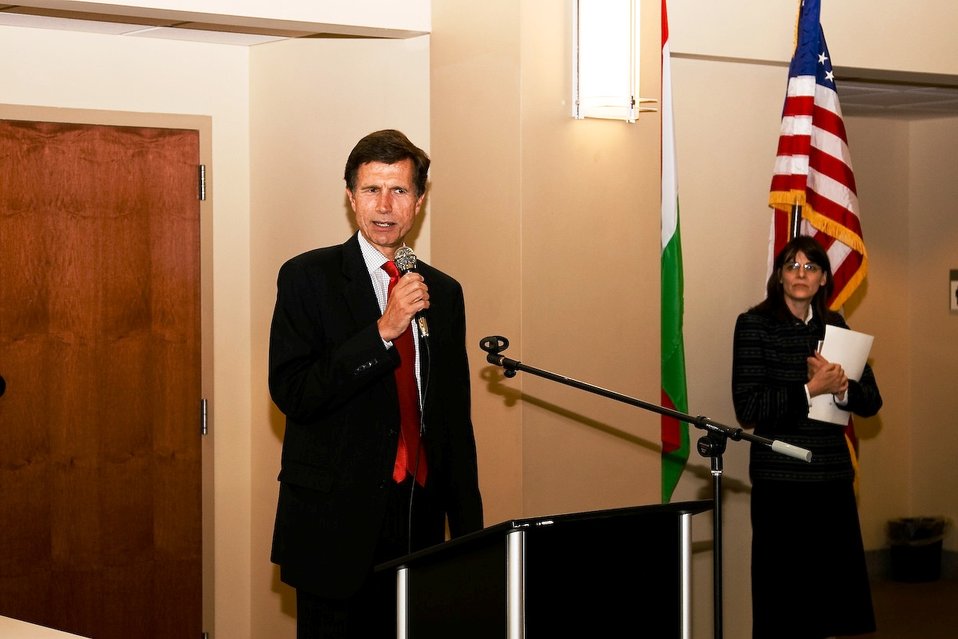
Assistant Secretary Blake Delivers Remarks in Tajikistan

U.S. Assistant Secretary of State Robert O. Blake delivers remarks in Dushanbe, Tajikistan, on August 31, 2010.